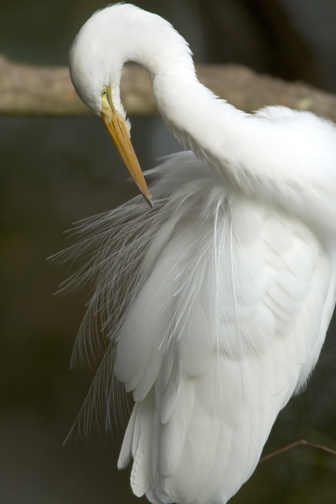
Great Egret

The great egret is just one of the species at Blackwater National Wildlife Refuge that could be affected by climate change and sea level rise.